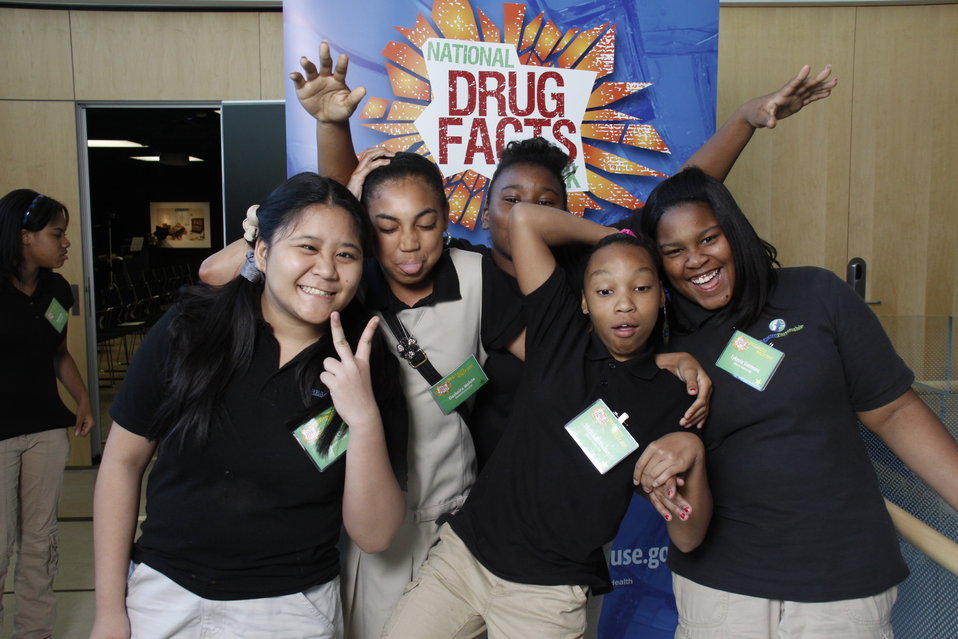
NDFW Mentor Event